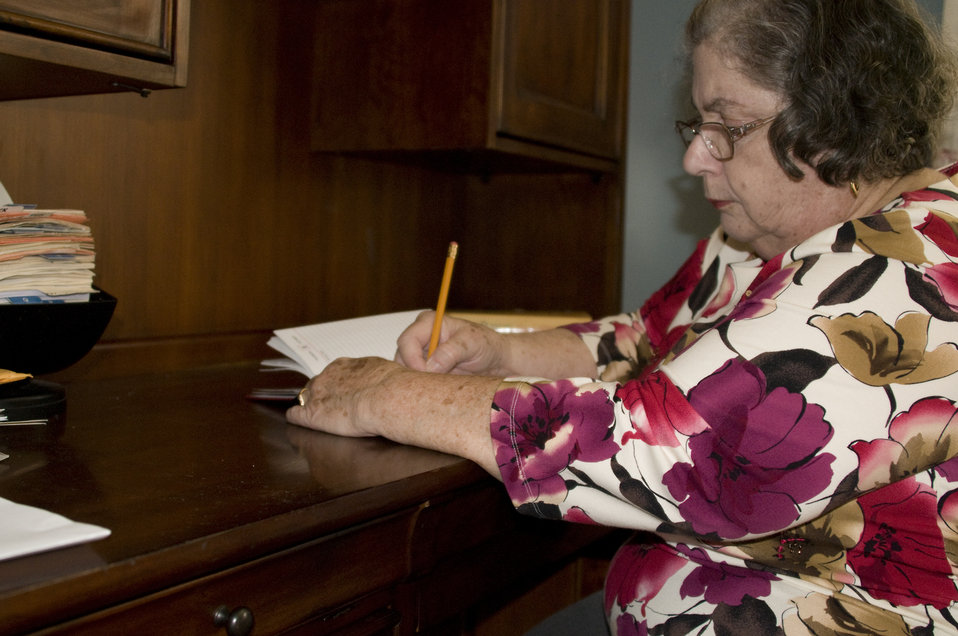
Seated at her in-home desk after having picked up her mail from her street side mailbox, this woman, who is a rheumatoid arthritis patient, was making notations in what appeared to be a daily diary. Living with arthritis does not necessarily mean existing in a non-functional state.Treatment